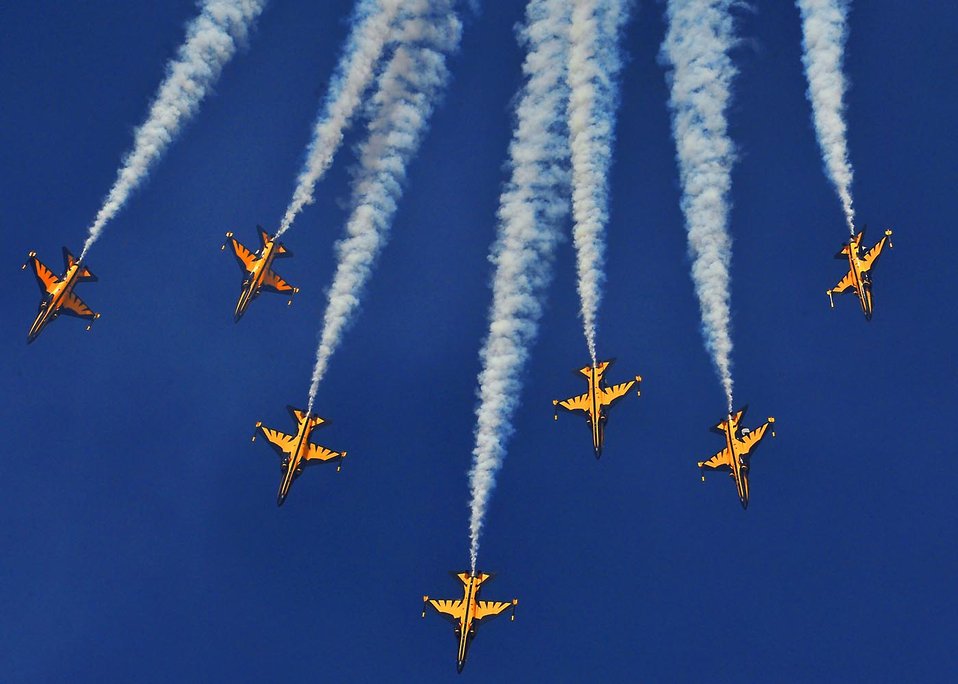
Osan air power

The Republic of Korea Air Force Black Eagles perform aerial stunts in Black Eagles T-50Bs Oct. 30, 2011. More than 50,000 service members and spectators from around the world watched the aerial stunts and jumps during Air Power Day 2011.